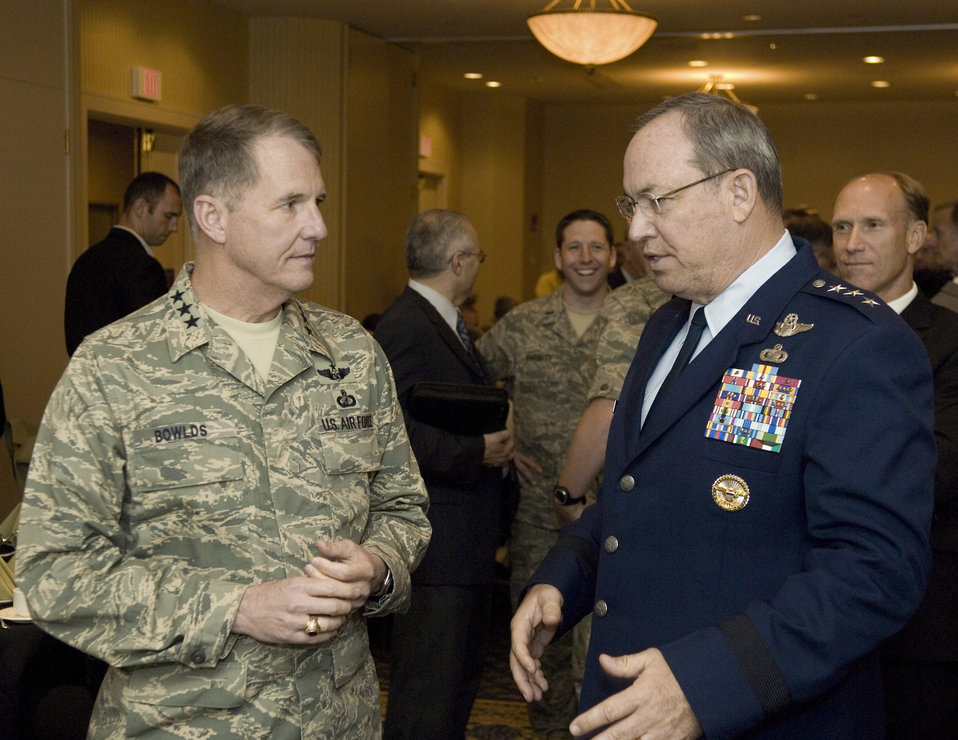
Air Force official discusses 21st century ISR challenges

Lt. Gen. David A. Deptula (right) chats with Lt. Gen. Ted F. Bowlds during a June 10 forum near Hanscom Air Force Base, Mass. General Deptula later shared insights about key intelligence, surveillance and reconnaissance challenges during a luncheon speech. General Deptula is the the Air Force deputy chief of staff for ISR, and General Bowlds is the Electronic Systems Center commander.